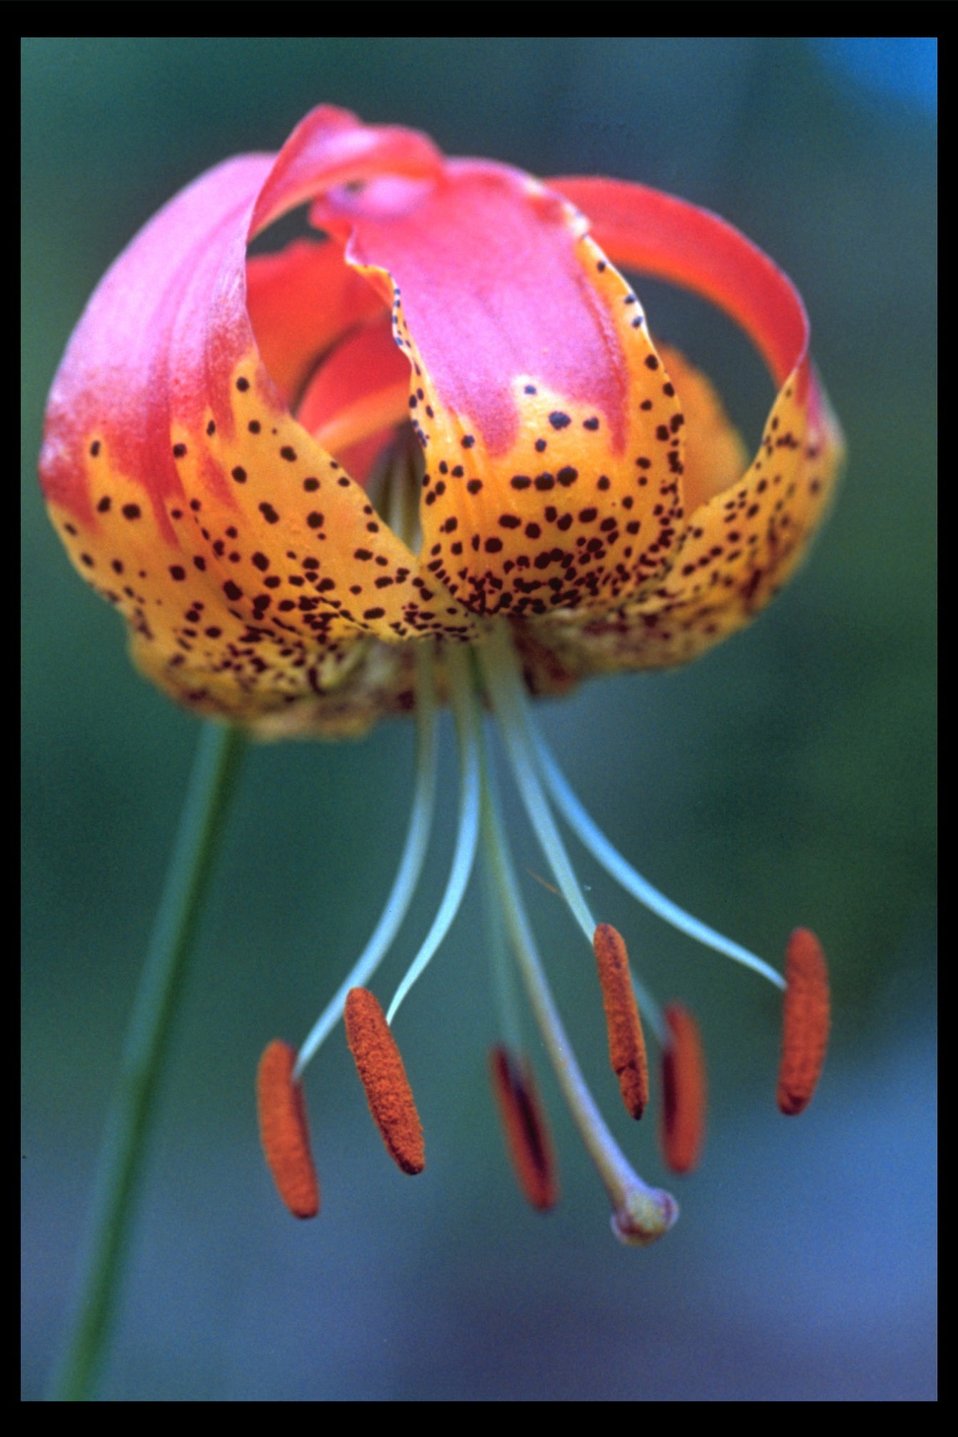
Vollmer's Tiger Lily (Lilium vollmeri) found near the Goolaway Gap, which is the head of West Fork Trail Creek.